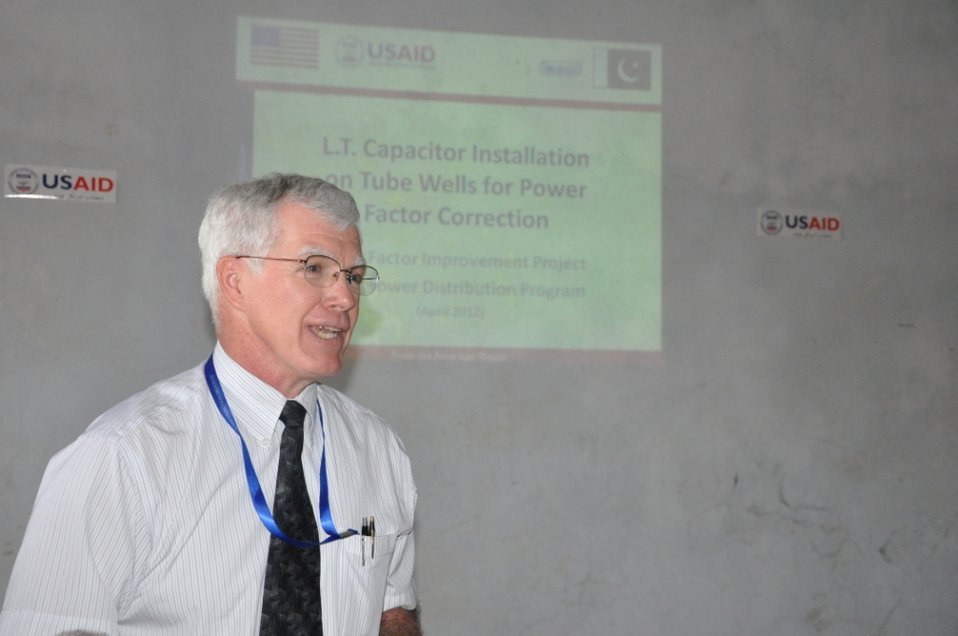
Usaid To Provide Technical Assistance To Improve Efficiency Of Tube-Wells In Iesco By Installing 2600 Lt Capacitors at Islamabad on April 26, 2012